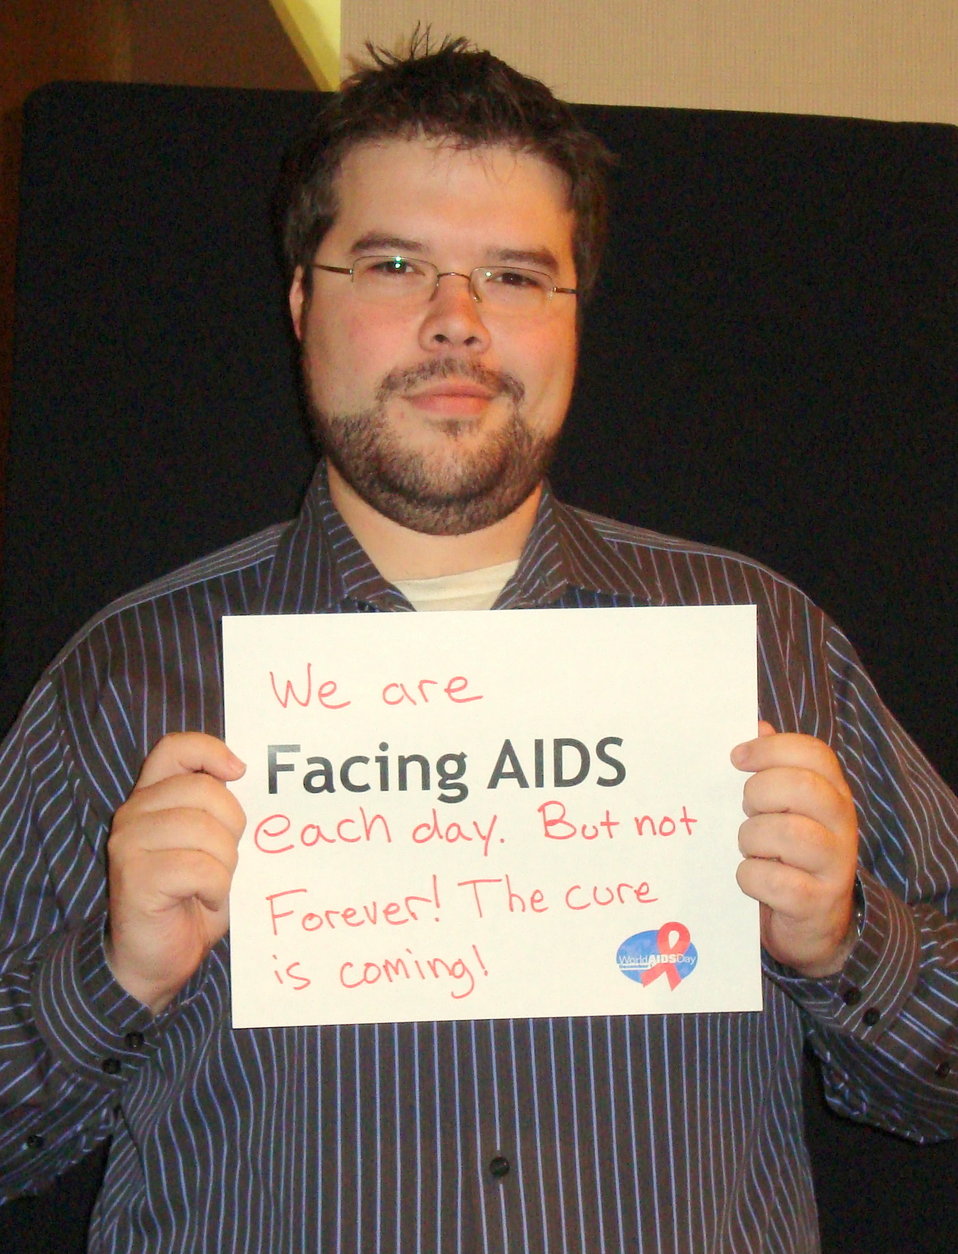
FacingAIDSCampaign 014